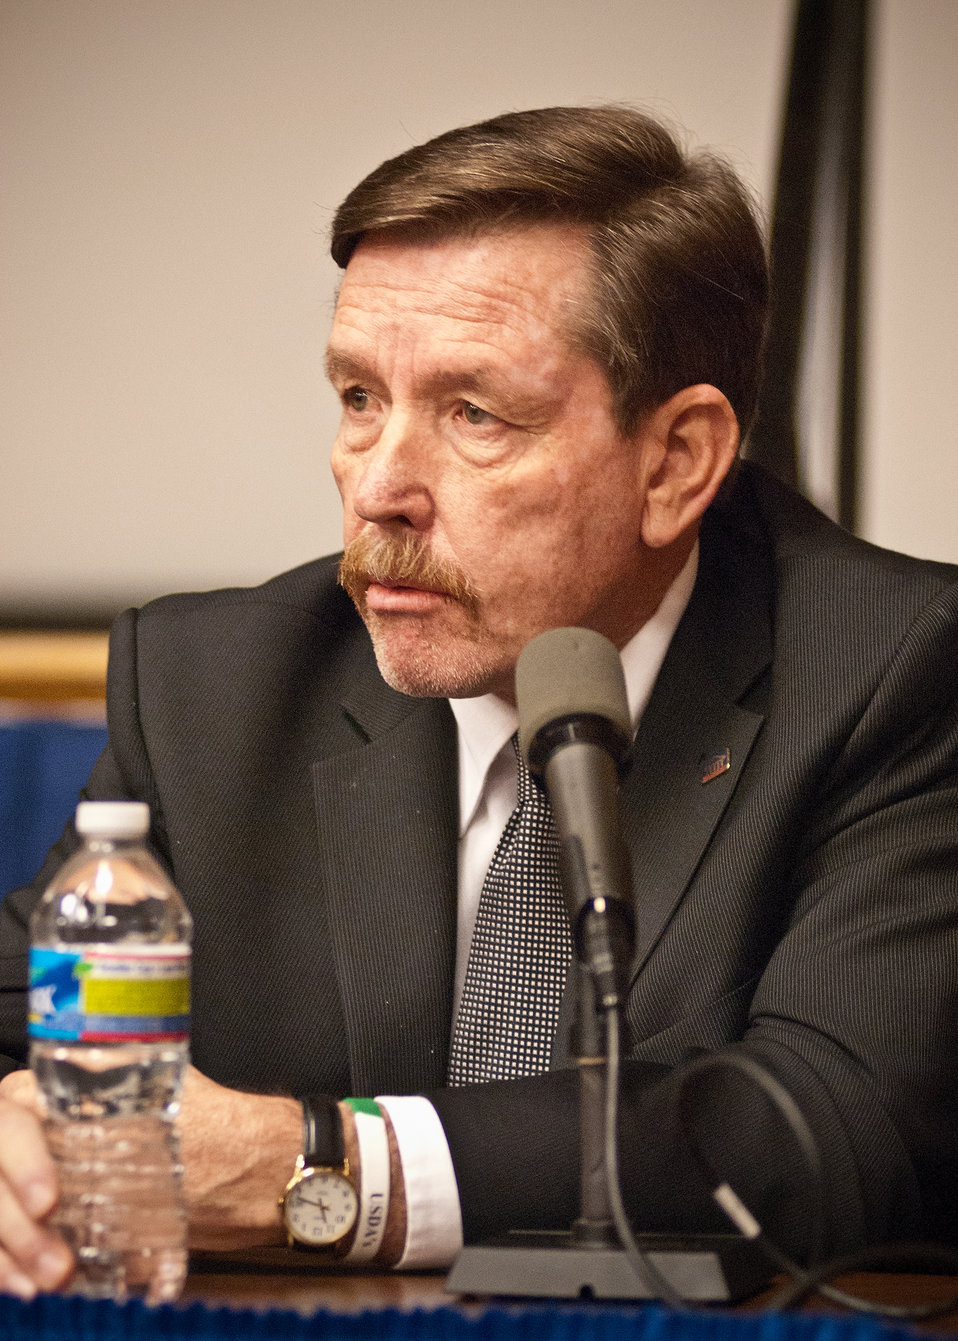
Richard Swenson, Departmental Management a member of the USDA Panel of Success: Hiring and Employing Individuals with Disabilities offers his experience and advice to U.S. Department of Agriculture employees during National Disability Employment Awareness Month event in Washington, DC, on Wednesday, October 5, 2011. Agriculture Secretary Tom Vilsack is dedicated to establishing the USDA as the lead Federal agency in employing individuals with disabilities. The theme for the event is “Profit by Investing in Workers with Disabilities.” USDA is committed to ensuring that all our programs are accessible and inclusive of individuals with disabilities.